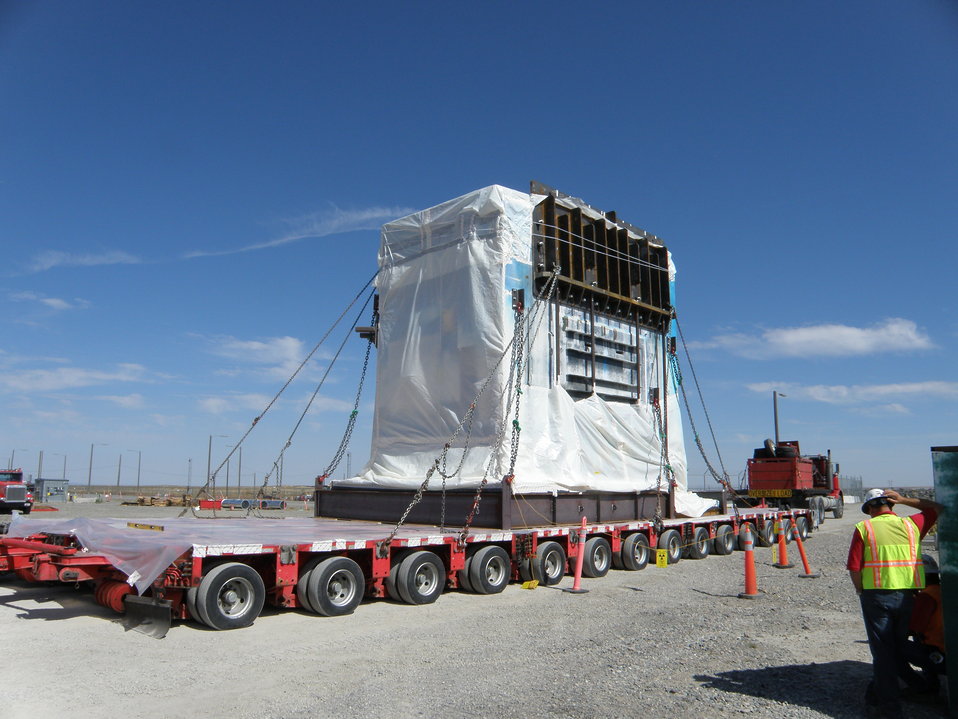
Materials Test Reactor hot cell

The Materials Test Reactor hot cell loaded and ready for transport. The hot cell was permanently disposed of onsite at the Idaho Site’s Idaho CERCLA Disposal Facility (ICDF). The D&D of the MTR and the hot cell was an ARRA funded project.